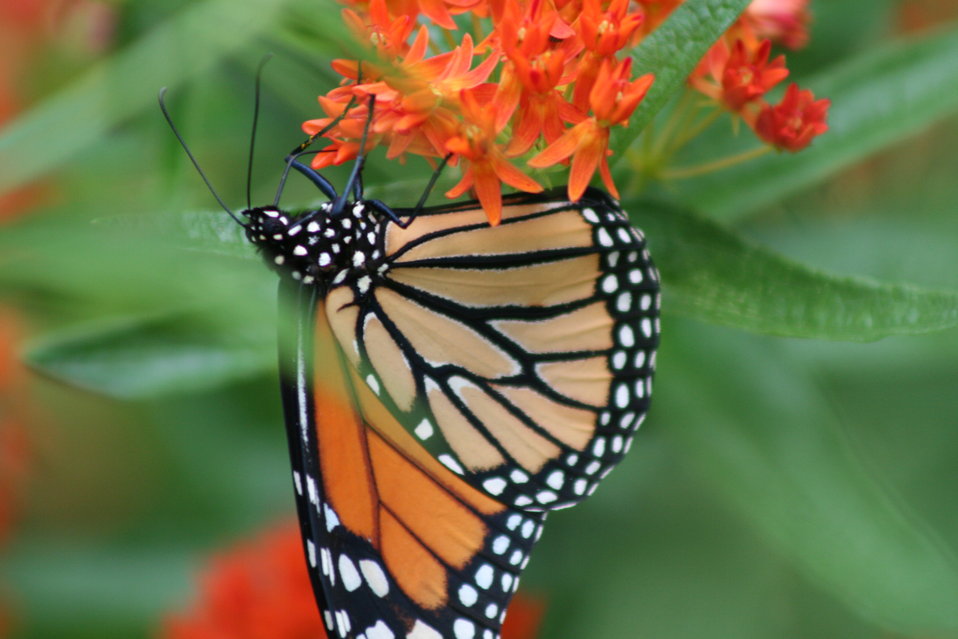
Monarch butterfly on butterfly weed.